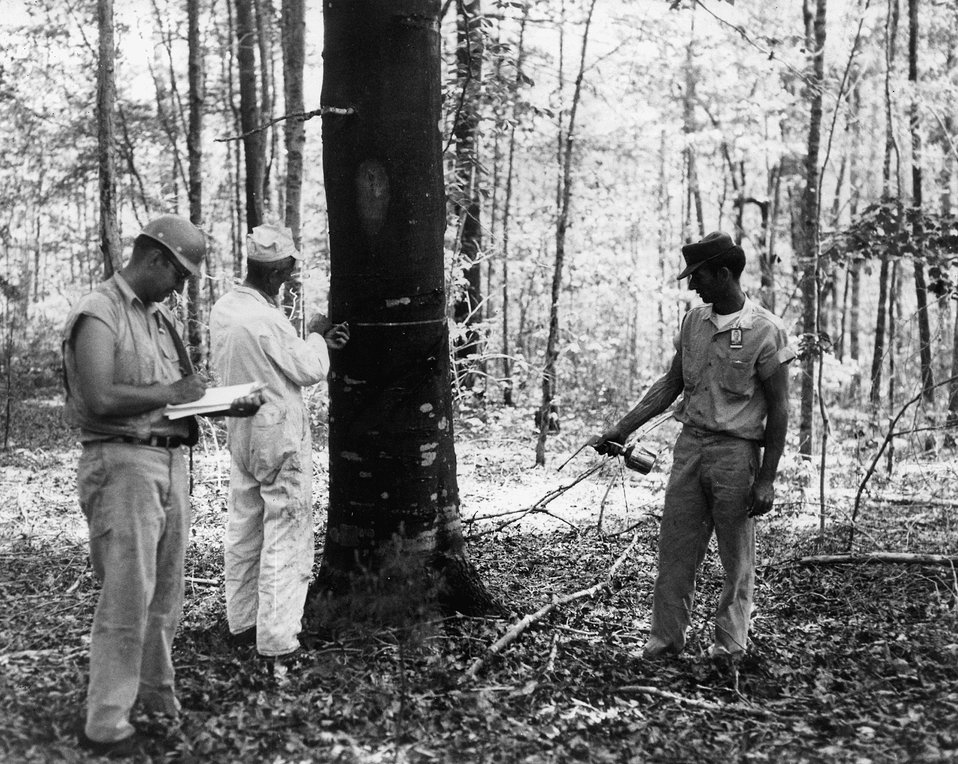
FOREST MANAGEMENT OF THE TIMBERLAND -- 100,000 acres of it -- surrounding the Oak Ridge National Laboratory, Tennessee, and the Savannah River Plant, South Carolina, is being put to good use by the Atomic Energy Commission. c. 1969